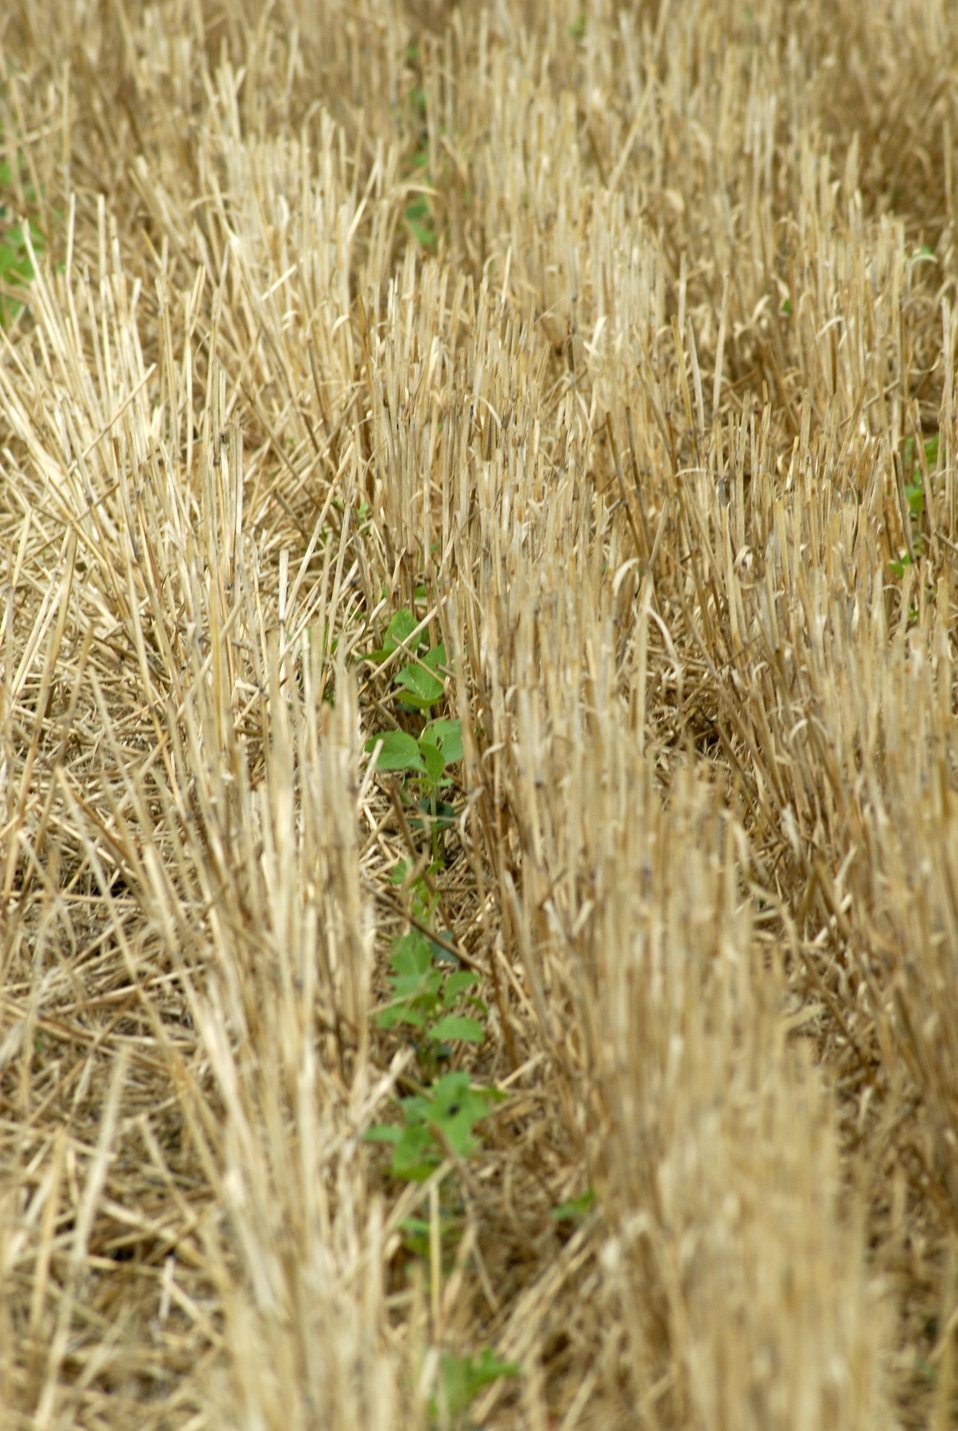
A field on a farm in Delaware on July 7, 2008 practices no-till farming as part of the Conservation Effects Assessment Project (CEAP) study of the Chesapeake Bay region by the U.S. Department of Agriculture (USDA) Natural Resources Conservation Service (NRCS). USDA NRCS states that no-till farming is playing a major role in cleaning up Chesapeake Bay as the government and farm groups continue their debate on how to reduce nutrient and sediment runoff into the massive watershed.